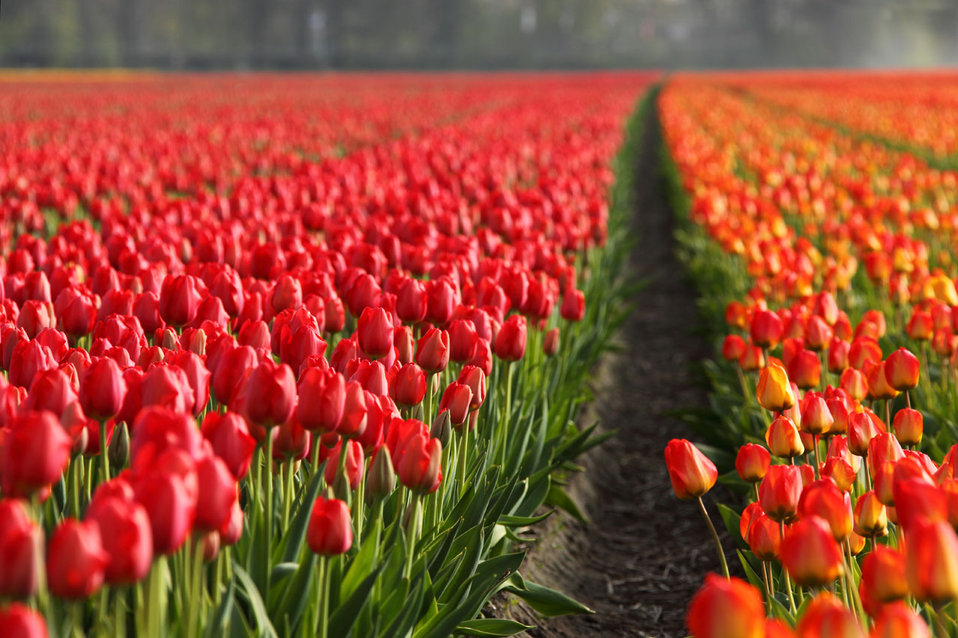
Tulip fields in holland.